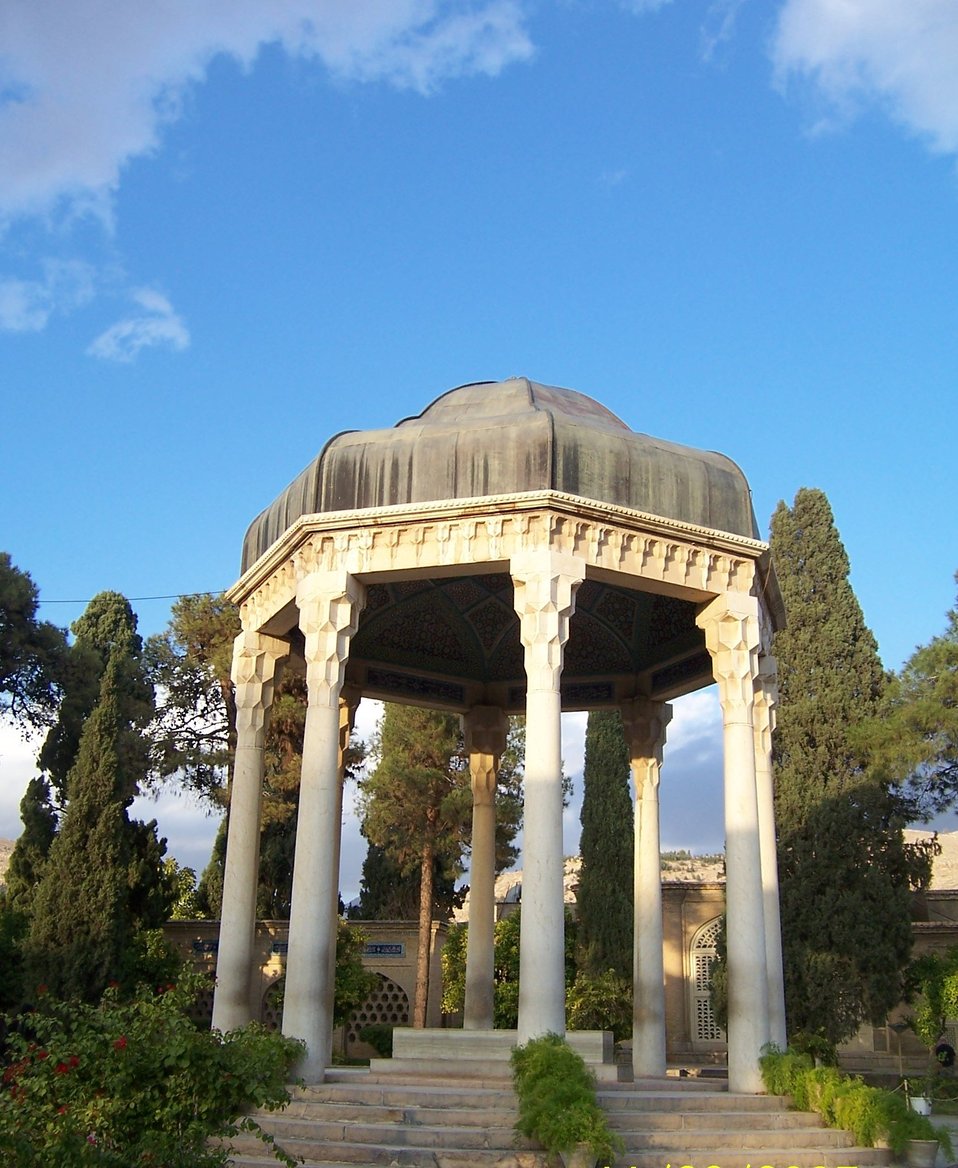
Hafez Tomb